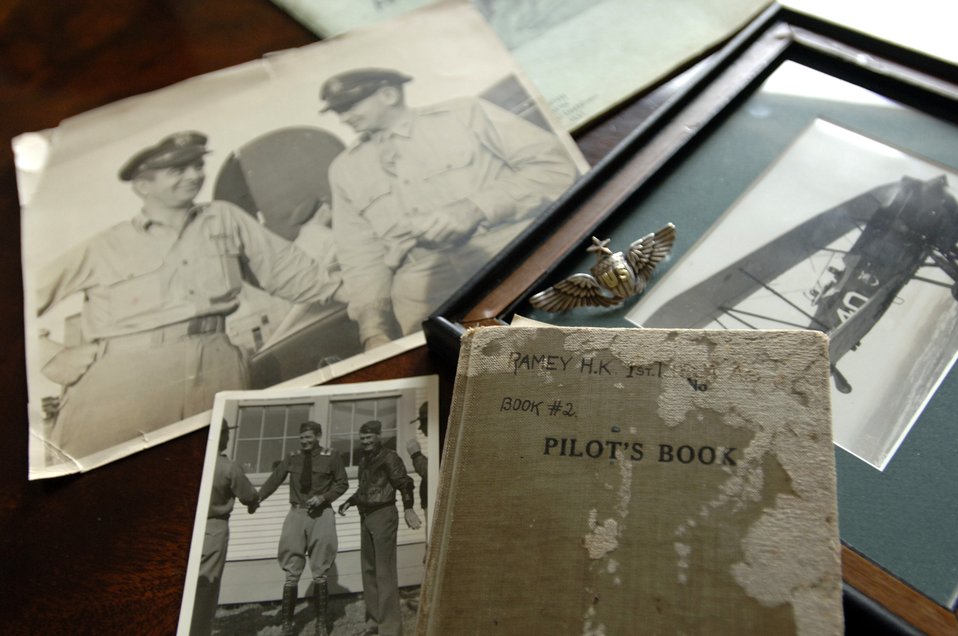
Memories of father stay strong, even after 63 years

Memorabilia of the life of Brig. Gen. Howard K. Ramey, one of the founding members of the Order of Daedalians, a fraternal order of military pilots. In the center of the photo are the pilot's wings that were handmade for him by a friend.